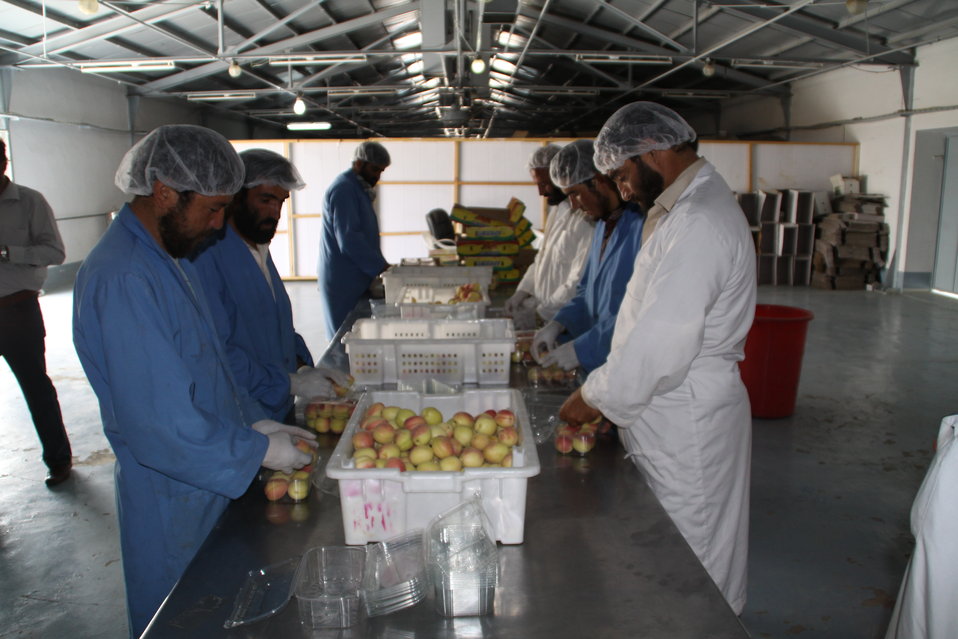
Badam Bagh Farm